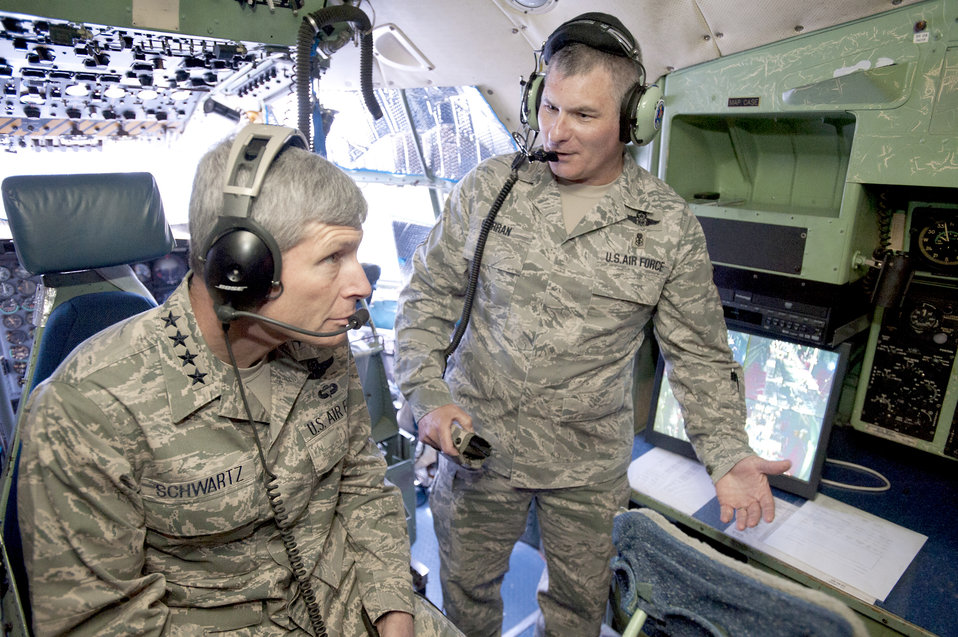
Air Force Chief of Staff visits USAFSAM

Air Force Chief of Staff Gen. Norton Schwartz listens as Senior Master Sgt. Scott Curran, superintendent of international and expeditionary education and training at the U.S. Air Force School of Aerospace Medicine, explains the mission scenarios and emergency procedures taught in the C-130 Hercules simulators to better prepare aircrews responsible for the medical evacuation of patients. General Schwartz was visiting the school May 13, 2010, at Brooks City-Base in San Antonio.